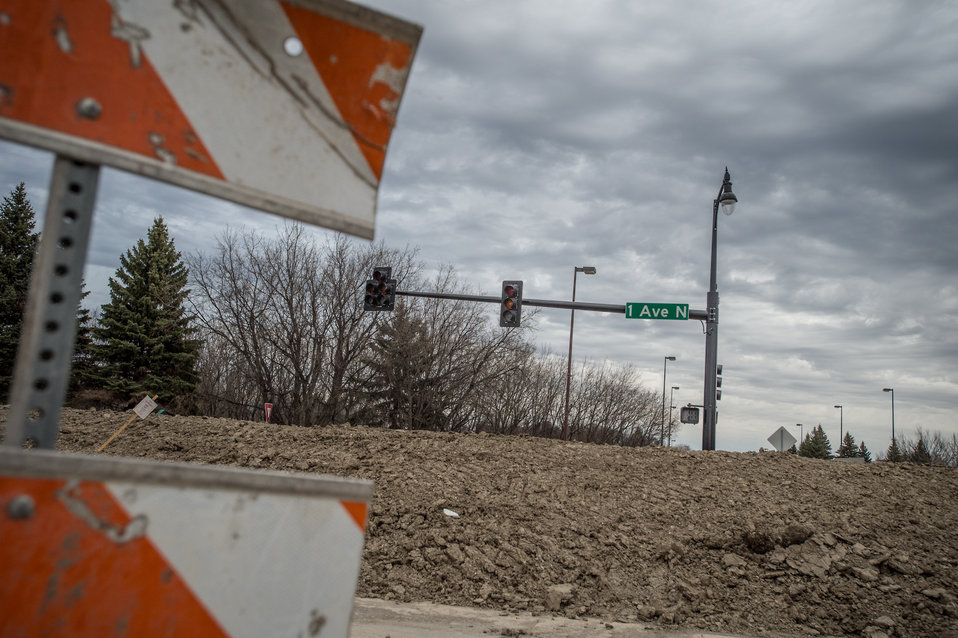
Temporary clay earthen dike at the intersection of 2nd St. N and 1st Ave. N. will prevent Red River flood waters (under the bridge beyond) from reaching the nearby city hall, in Fargo, N.D. on Monday, April 29, 2013. To learn about the Red River Basin Initiative, see www.mn.nrcs.usda.gov/news/features13/RRBI.html.